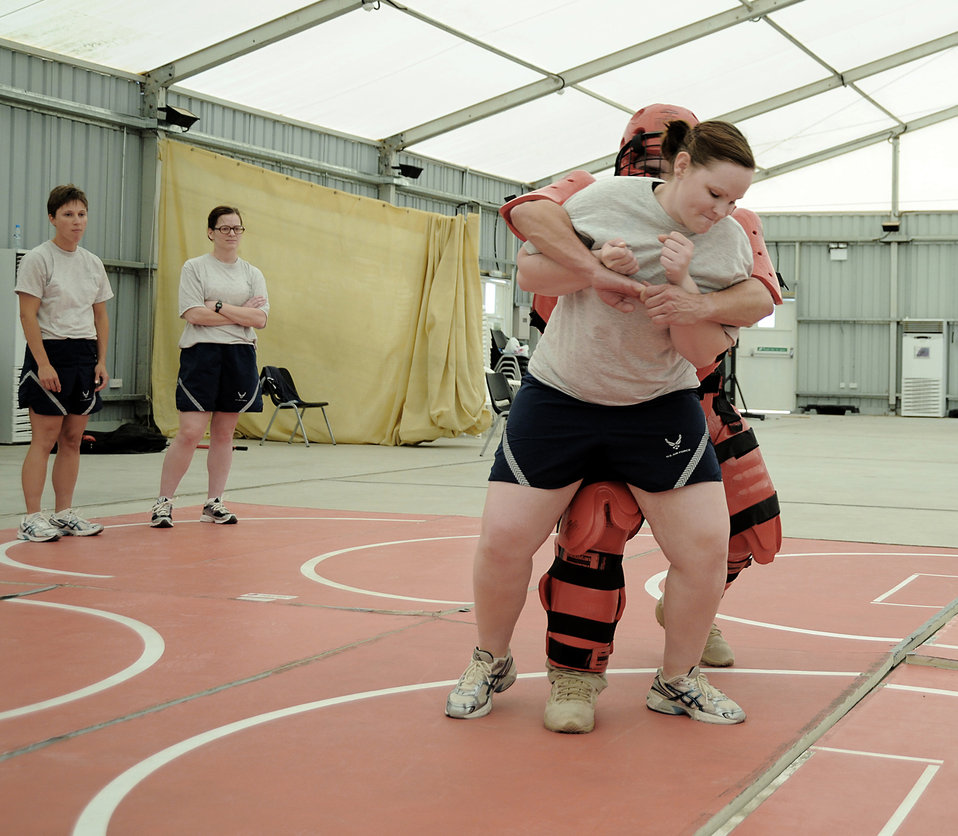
Getting defensive

Airman 1st Class Amanda Dunaway fights off the